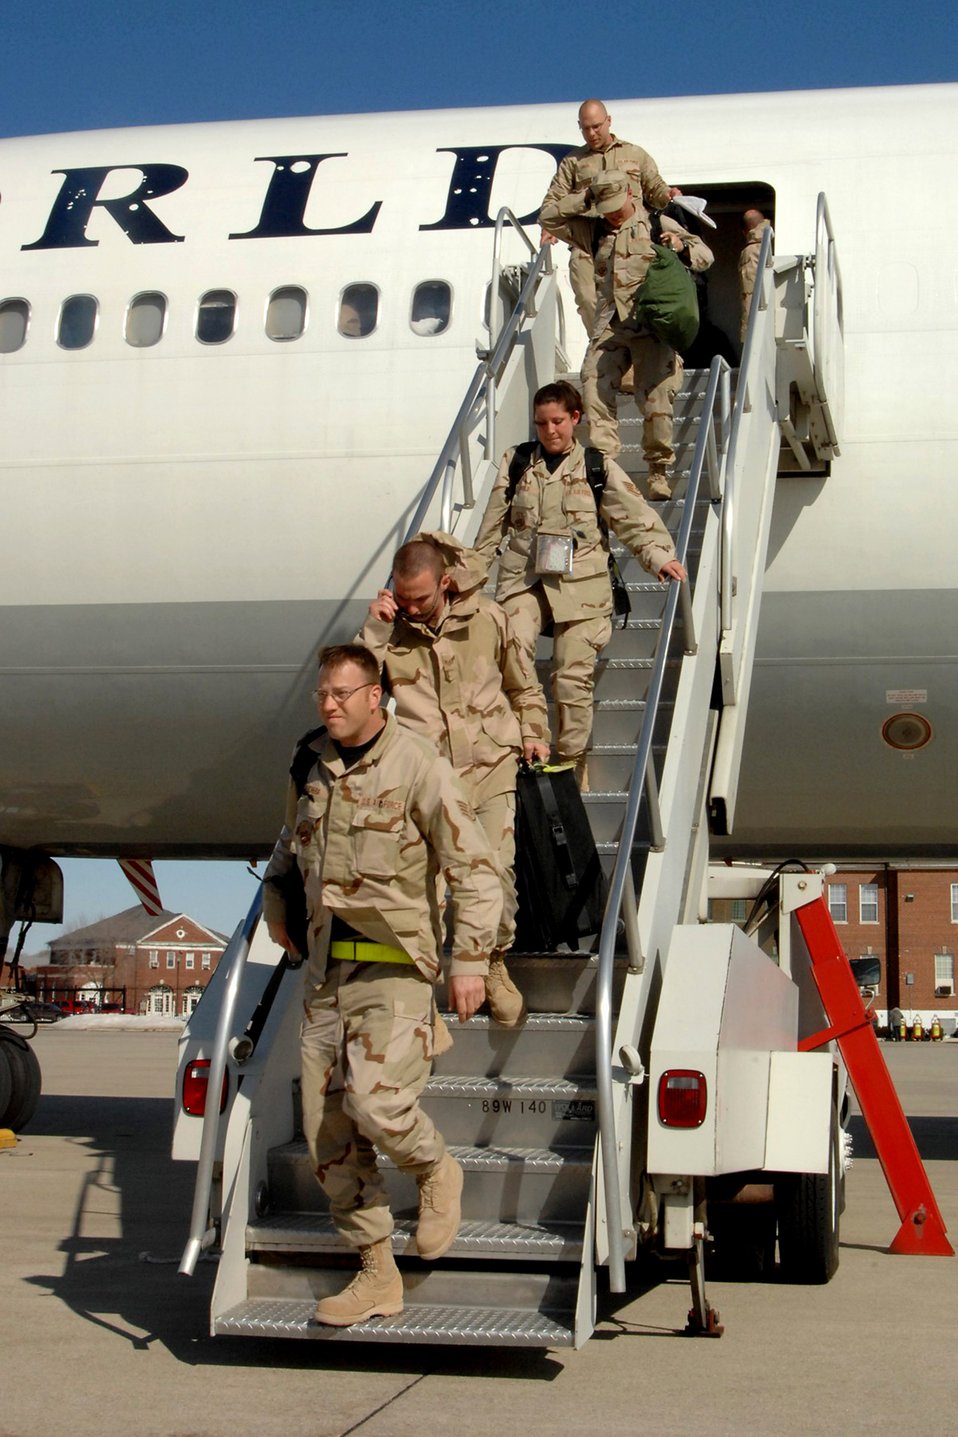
Michigan Air Guard returns from Iraq deployment

Airmen of the 127th Wing arrive March 5 at Selfridge Air National Guard Base in Michigan as they return from a deployment to Balad Air Base, Iraq. About 200 Airmen returned to frigid temperatures of Michigan and a crowd of about 200 family members and friends.